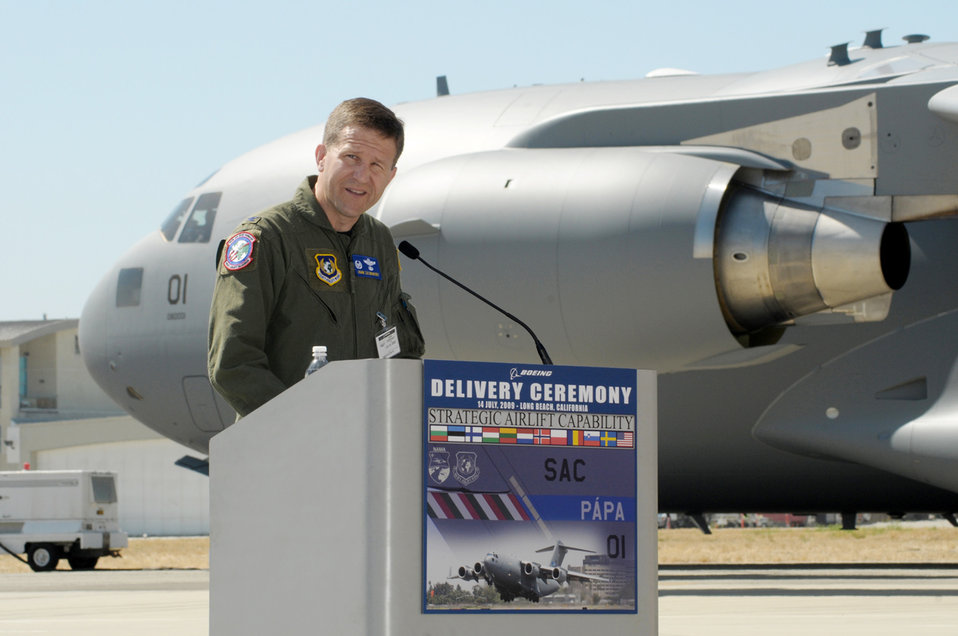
12-nation Heavy Airlift Wing takes flight with first C-17

Col. John Zazworsky addresses the crowd after officially receiving the first of three C-17 Globemaster IIIs to be acquired by the 12-nation Strategic Airlift Capability Program July 14 at Long Beach, Calif. The colonel commands the program's multinational, operational-level unit, the Heavy Airlift Wing, which includes personnel from NATO member nations Bulgaria, Estonia, Hungary, Lithuania, the Netherlands, Norway, Poland, Romania, Slovenia and the United States, as well as from Partnership for Peace nations Finland and Sweden.